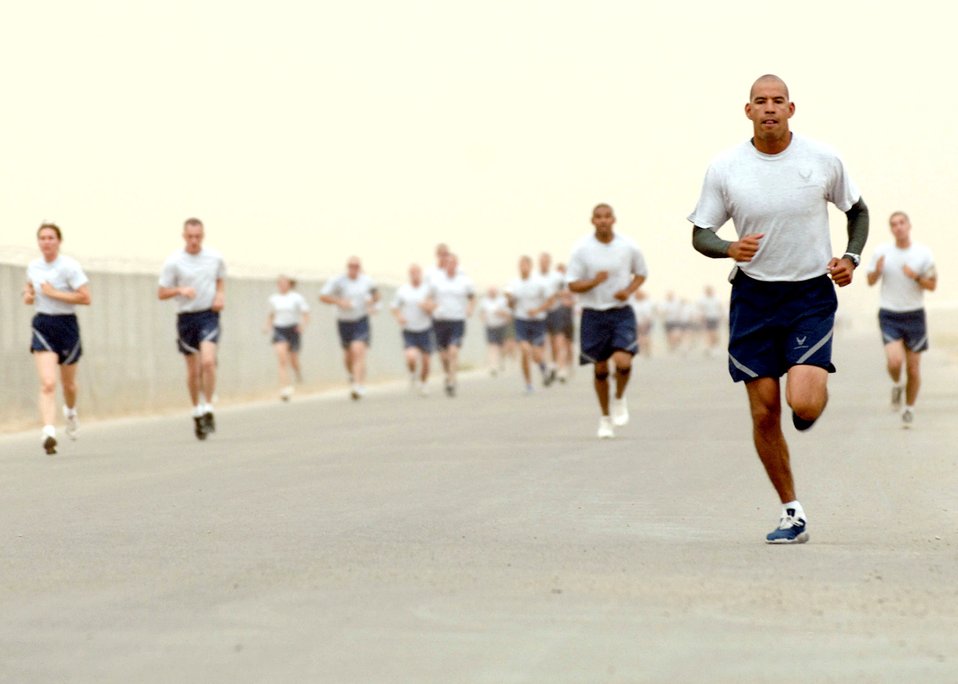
Running and remembering

Tech. Sgt. Rudy Moreno leads other members of the 407th Expeditionary Group down the flightline during a 5K run, which is the kickoff to a full day of events celebrating Memorial Day May 28 at Ali Air Base, Iraq. Memorial Day, originally named Decoration Day, was instituted May 5, 1866, in Waterloo, N.Y., to honor the fallen Union Soldiers of the Civil War. After World War I it was expanded to include all military members that have given the ultimate sacrifice for their country. Sergeant Moreno is assigned to the 407th Expeditionary Civil Engineer Squadron.